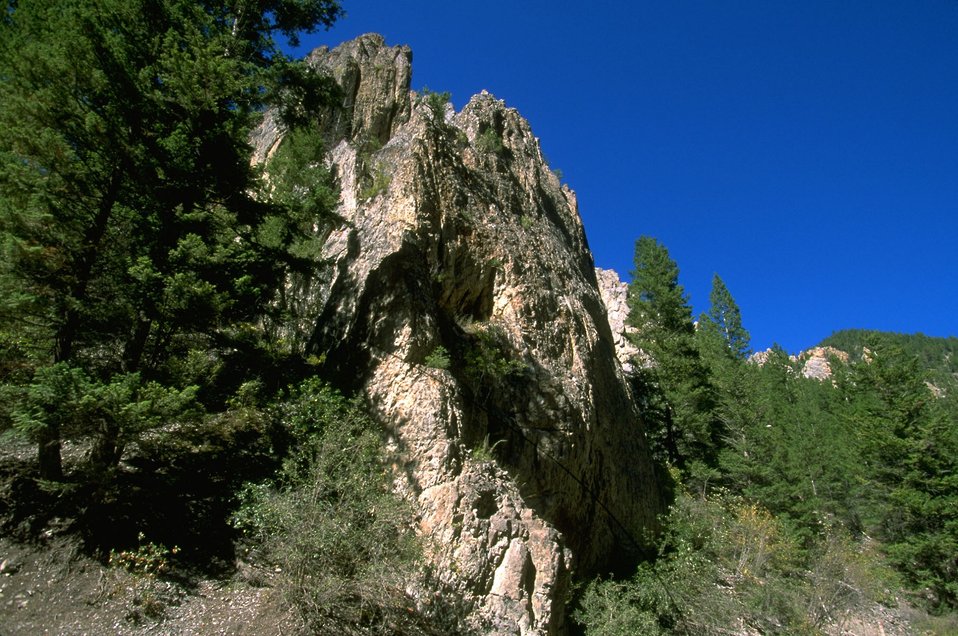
Rattler Gulch-Limestone Cliffs ACEC (area of critical environmental concern)